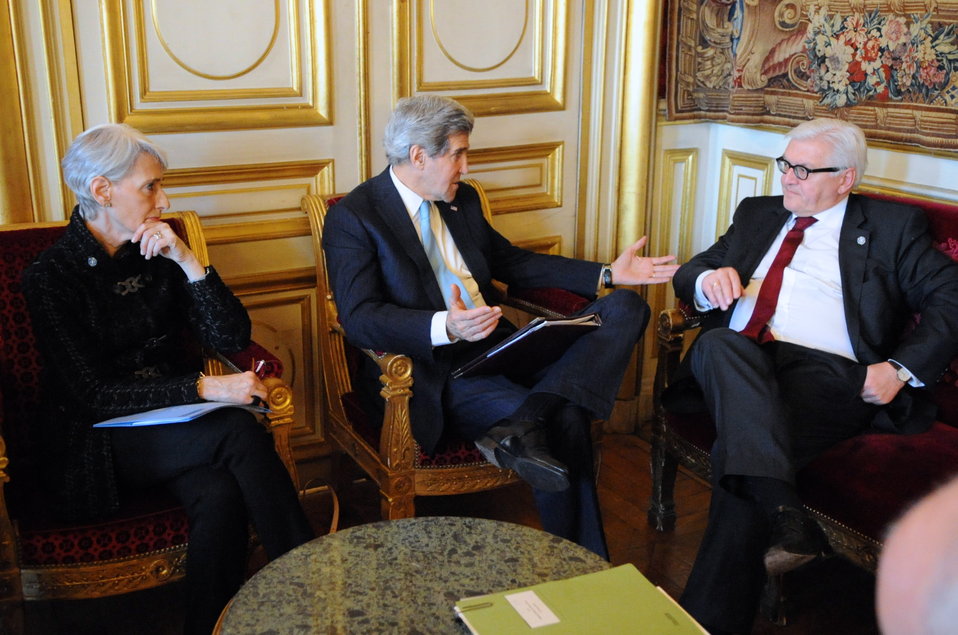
Secretary Kerry, Under Secretary Sherman Meet With German Foreign Minister Steinmeier

U.S. Secretary of State John Kerry and Under Secretary of State for Political Affairs Wendy Sherman meet with newly appointed German Foreign Minister Frank-Walter Steinmeier amid a London 11 meeting in Paris, France, on January 12, 2014.